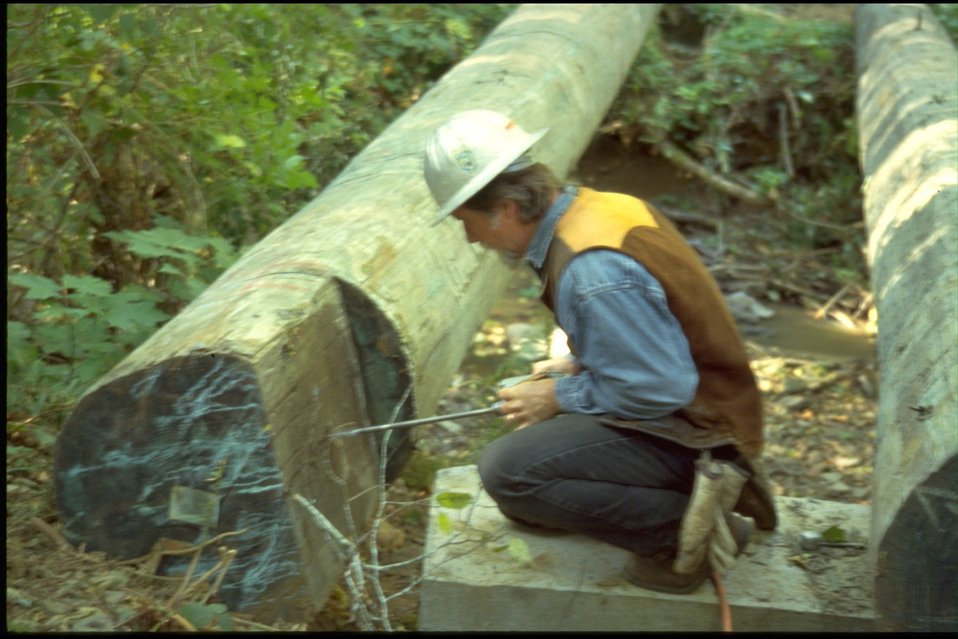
Clay Creek Foot Bridge.